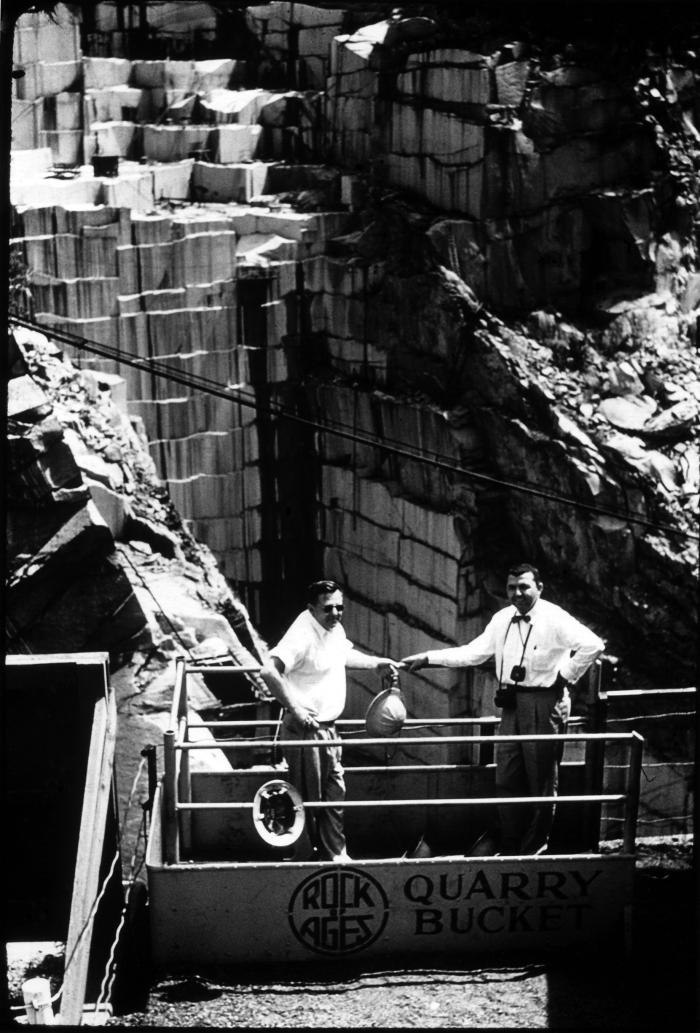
This 1950 photograph was provided by the Center for Disease Control's (CDC), National Institute for Occupational Safety and Health (NIOSH). The image depicted the interior of the Rock of Ages stone quarry in Vermont. Visible in the photograph were two men in a 'bucket' overlooking the quarry. Workers can be exposed to potential respiratory health hazards as well as other physical injuries when working in the stone cutting and quarrying industries.